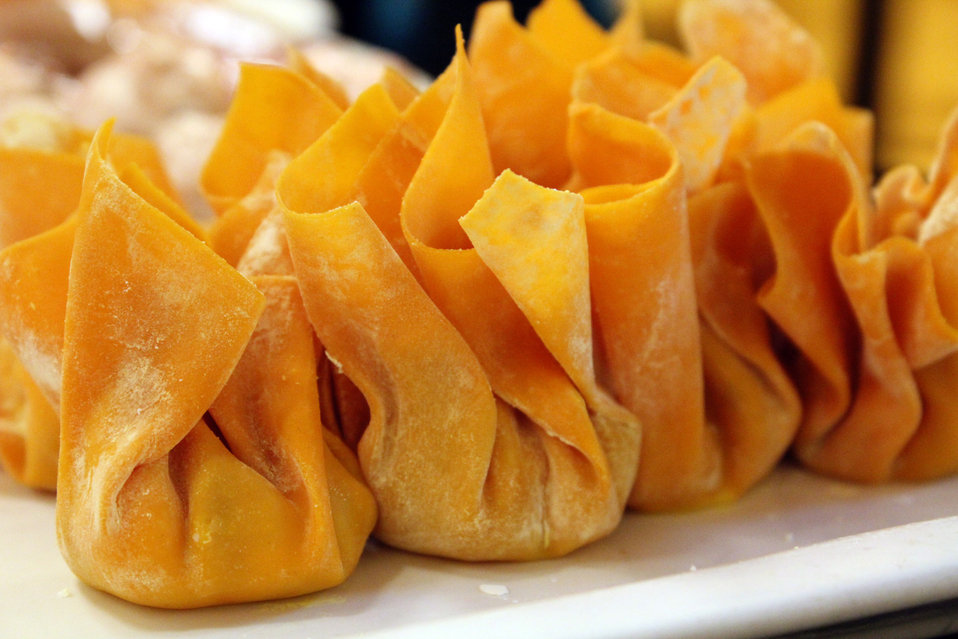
Siomai dimsum.